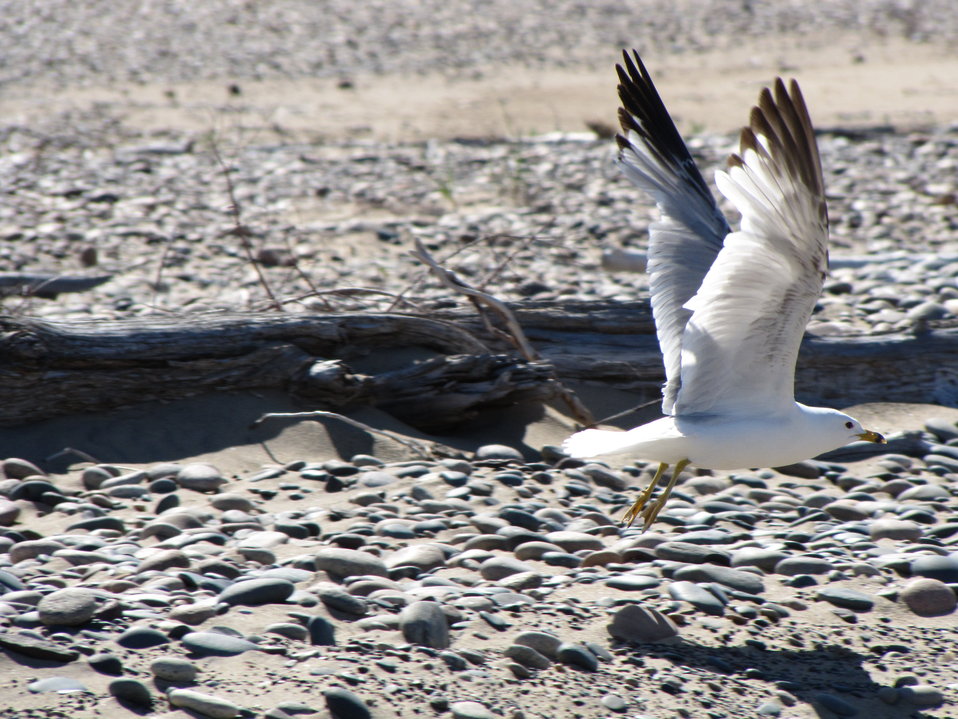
Seagull at Whitefish Point Unit of Seney National Wildlife Refuge.